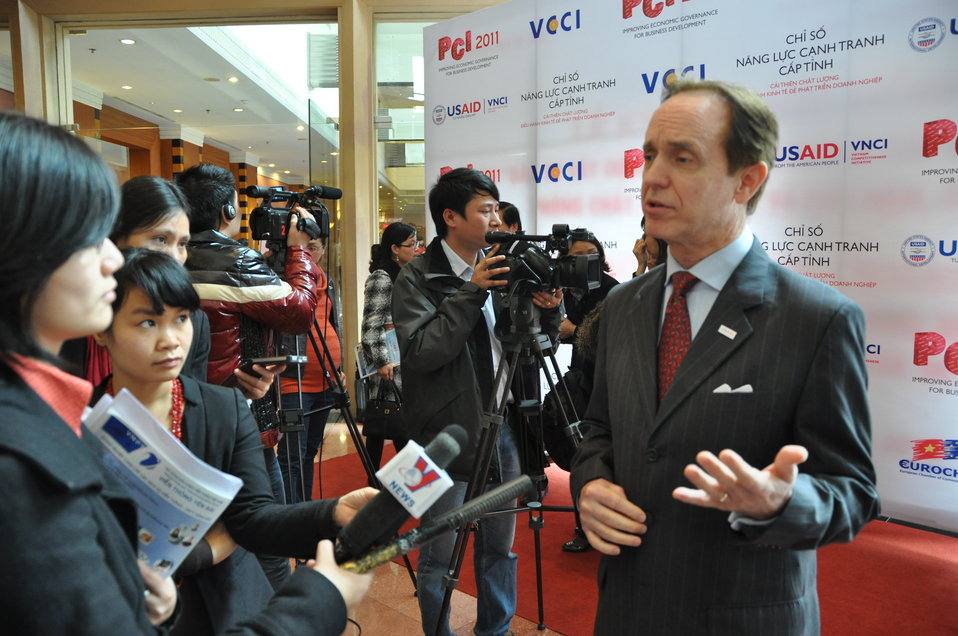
USAID Mission Director Francis Donovan at the Provincial Competitiveness Index 2011 Launch: